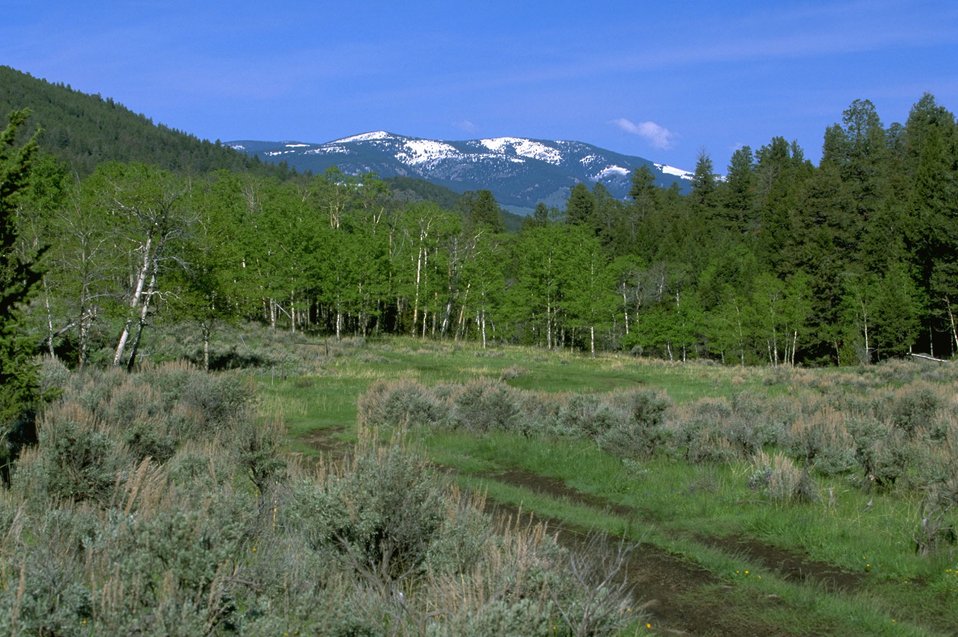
Snowy mountain above trees and meadow